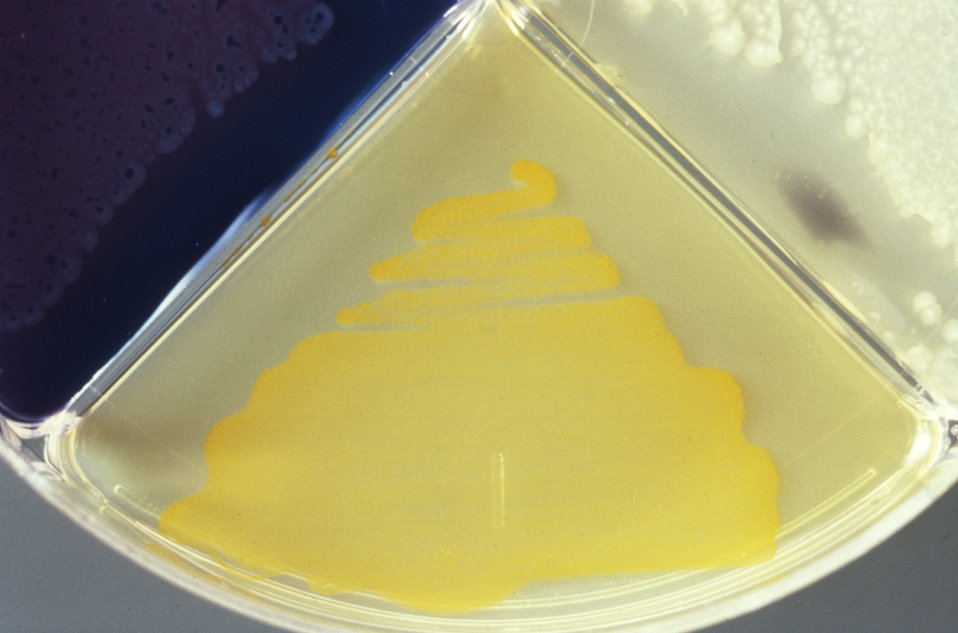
This image depicts reactions within a Presumpto II quadrant plate used in a mycology lab procedure.